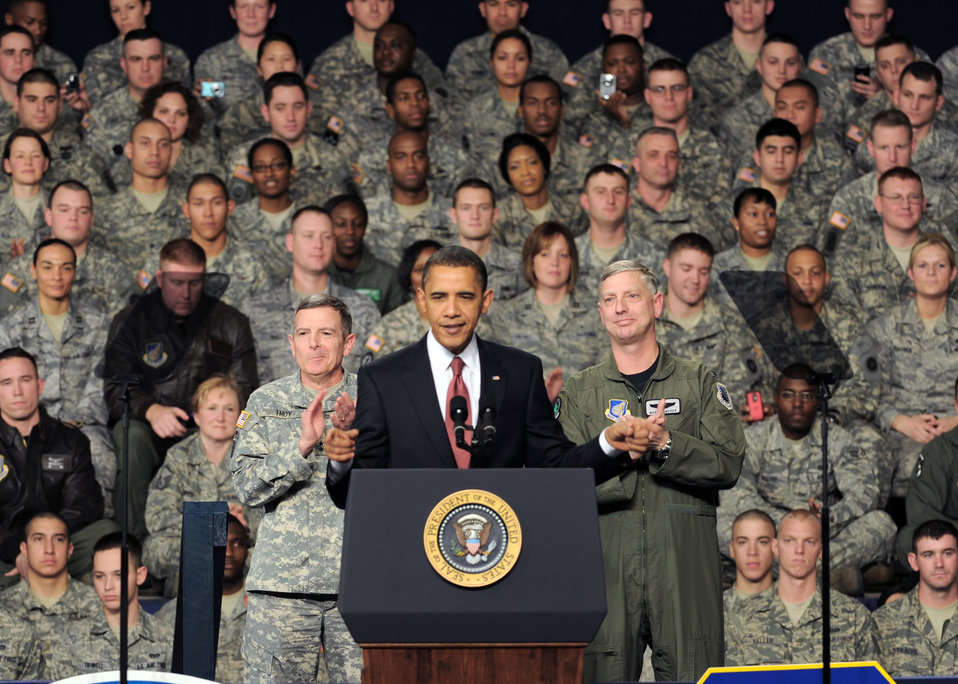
President visits Elmendorf Airmen

President Barack Obama gives a speech to a crowd of military personnel and civilians gathered Nov. 12, 2009, at Elmendorf Air Force Base, Alaska. The president was at the base to meet with servicemembers and offer remarks to the local community.